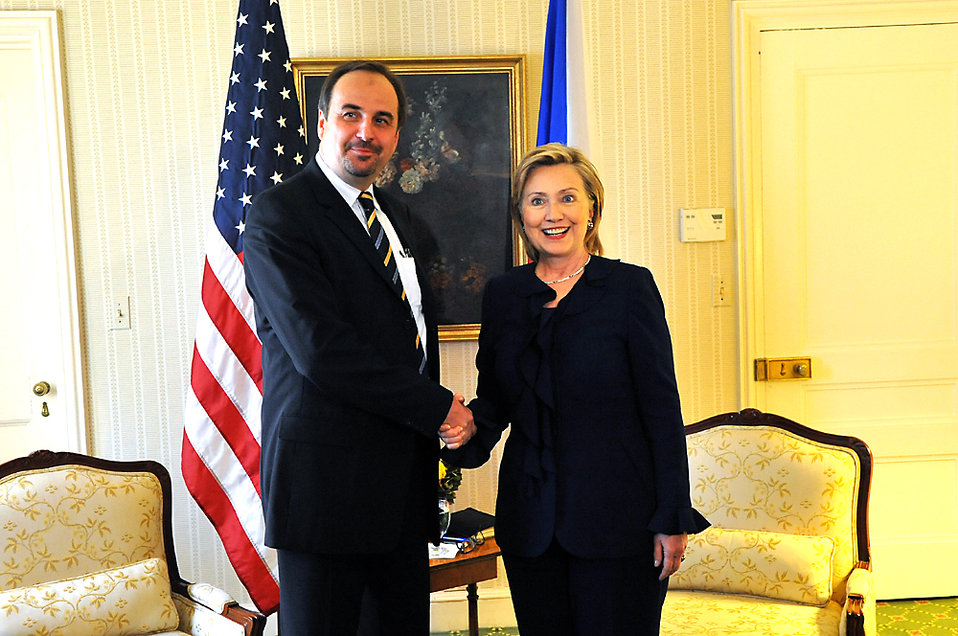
UNGA 2009: Secretary Clinton Meets With Czech Republic Foreign Minister

U.S. Secretary of State Hillary Rodham Clinton meets with Czech Republic Foreign Minister Jan Kohout at the Waldorf Astoria hotel during the 64th Session of the UN General Assembly in New York City, New York September 21, 2009.